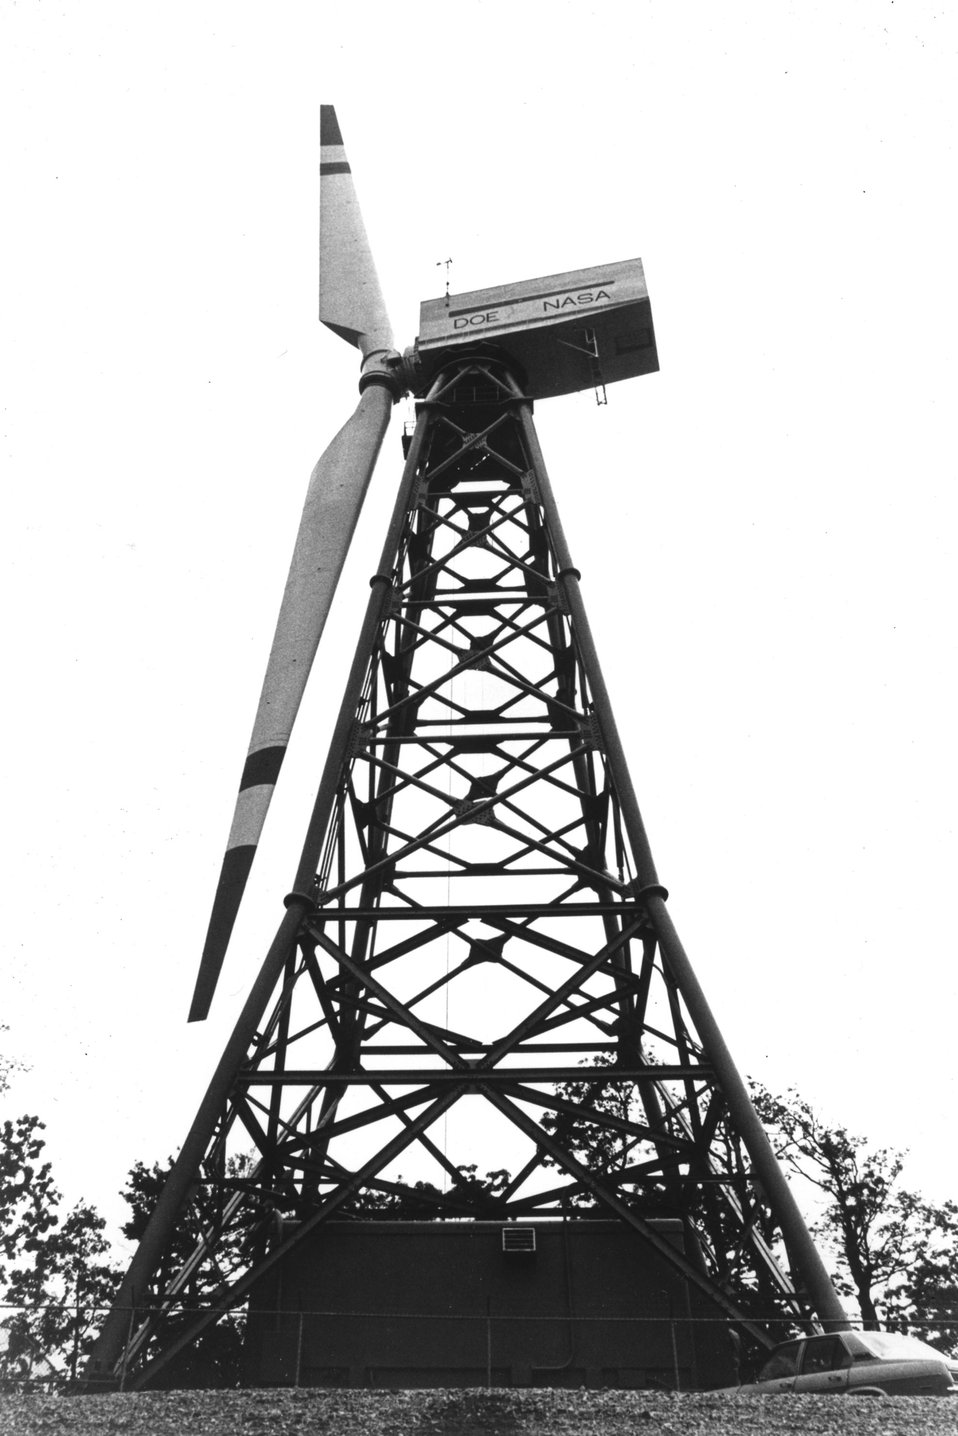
On July 11, 1979, the world's largest wind turbine generator with blades as long as the wingspan of a Boeing 707 was dedicated near Boone, North Carolina. c. 1979